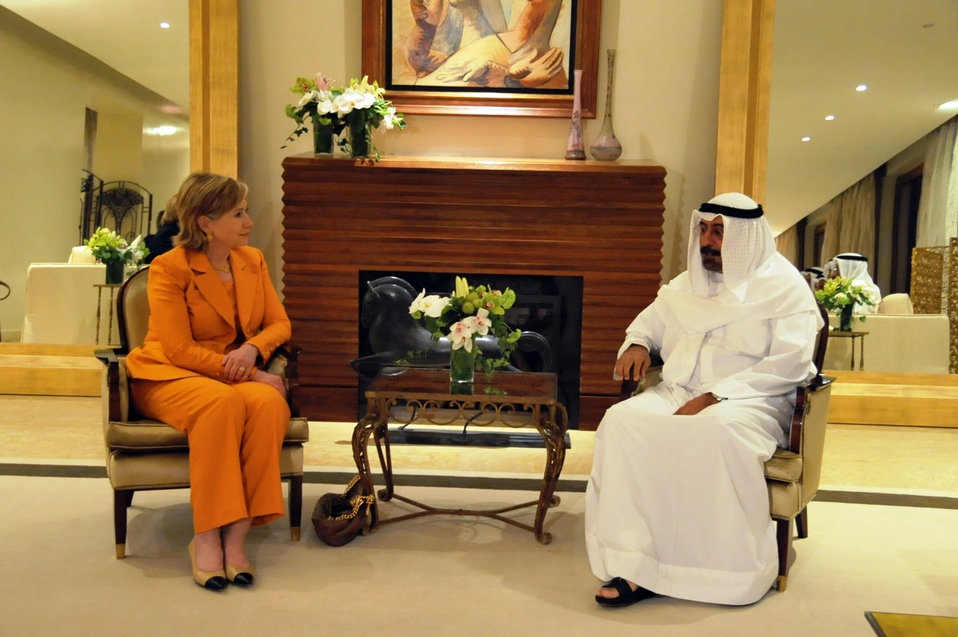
Secretary Clinton Meets With Kuwaiti Deputy Premeir

U.S. Secretary of State Hillary Rodham Clinton meets with the Kuwaiti Deputy Premier and Minister of Foreign Affairs Shaykh Dr. Mohammad Al Sabah in Kuwait City, Kuwait April 24, 2009.